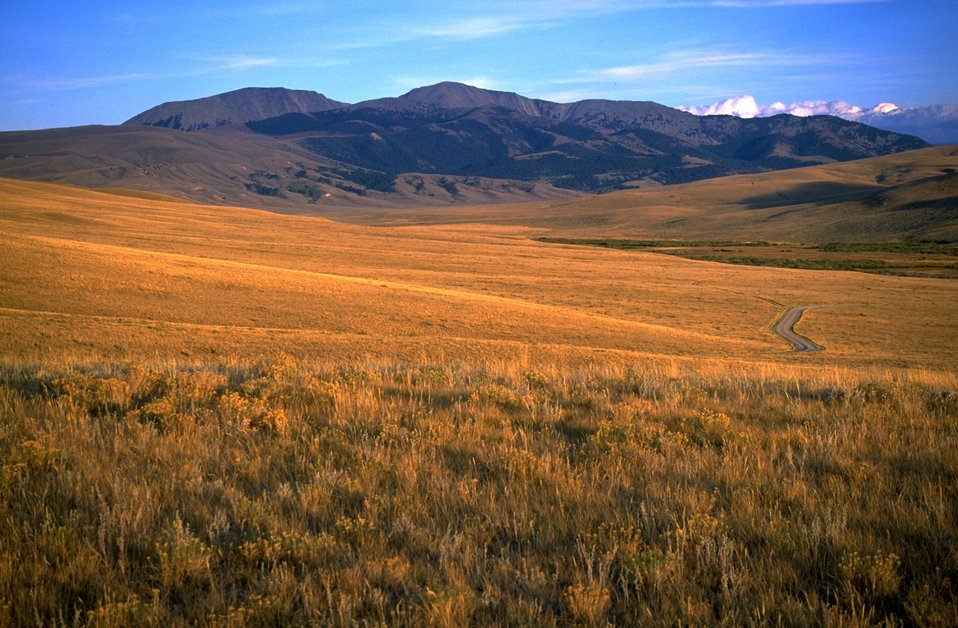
Grassy slope leading down to the East Fork Blacktail Creek